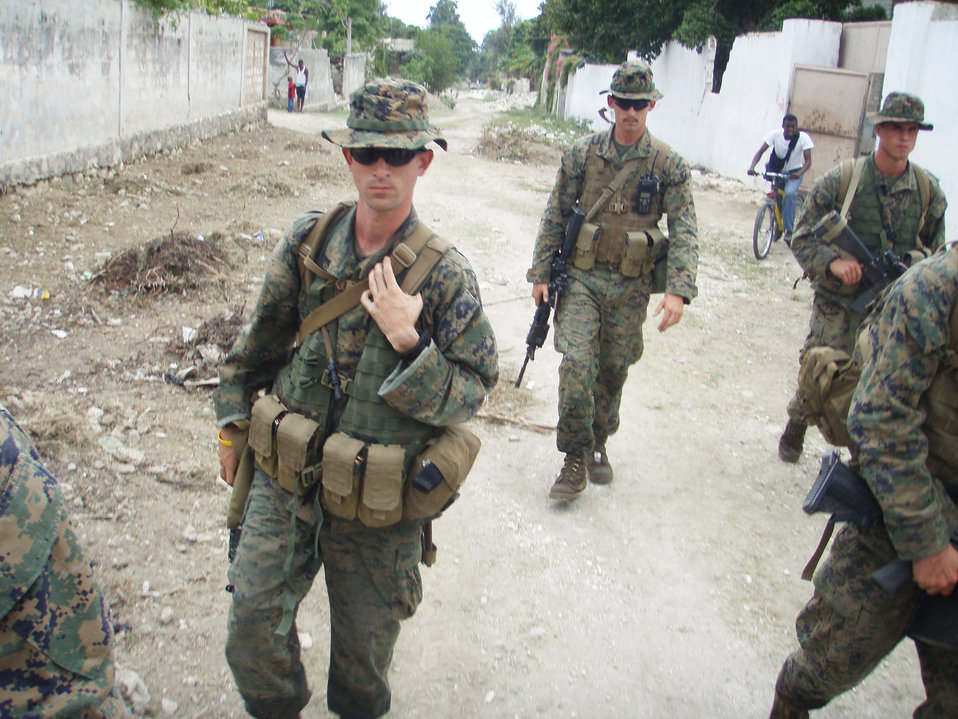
This image depicts a number of U.S. Marines who'd been transported by the USS Bataan to Haiti in order to provide security to responders during Operation Unified Response, responding to the Haitian earthquake disaster in January, 2010.